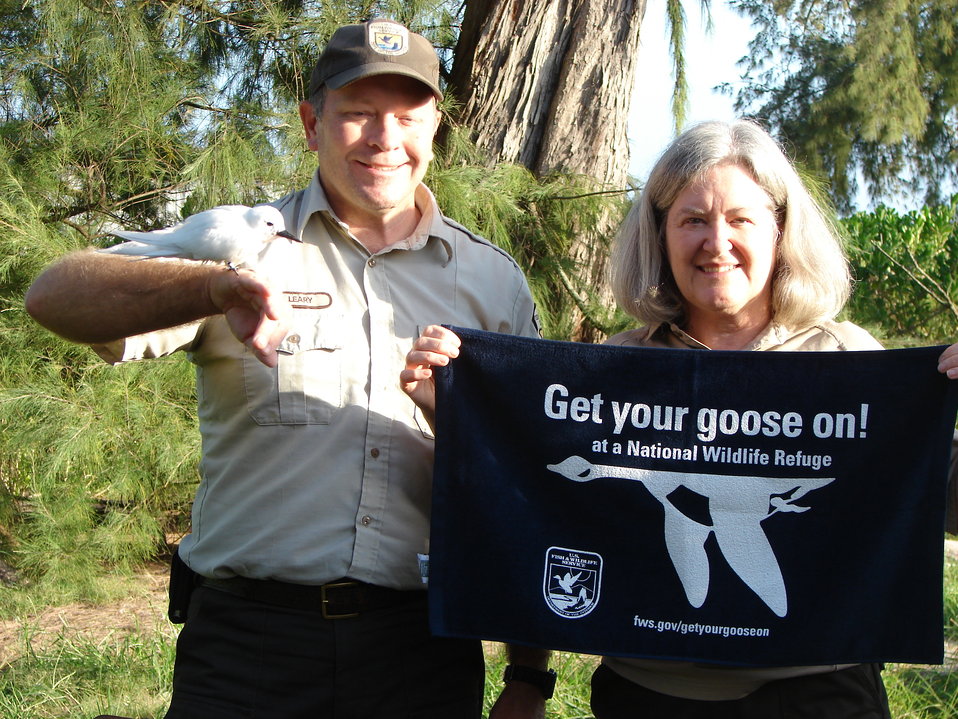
Get Your Goose On! - Pacific Atoll Style!

Midway Atoll National Wildlife Refuge staff take a break from feeding abandoned fledging white terns to Get Their Goose On!